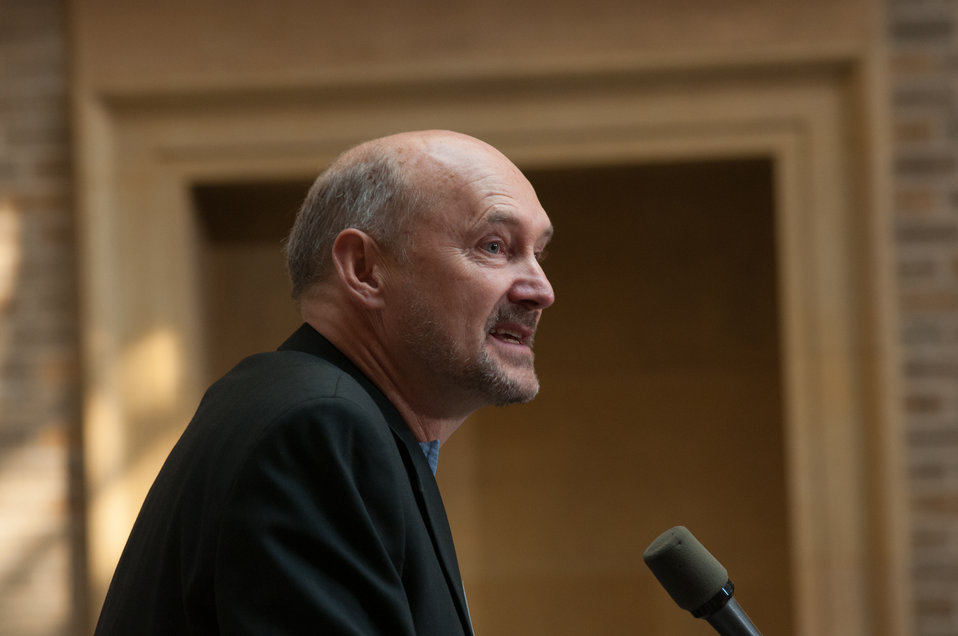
Alliance for Green Heat, President John Ackerly, speaks during the U.S. Department of Agriculture (USDA) Wood Energy Memorandum of Understanding, and awarded wood energy grants announcements event, at the USDA Headquarters, in Washington, D.C., on Wednesday, September 11, 2013. Signing the MOU are partnership leaders Biomass Thermal Energy Council, Executive Director Joseph Seymour; Alliance for Green Heat, President John Ackerly, USDA Agriculture Deputy Secretary Krysta Harden; Pellet Fuels Institute Executive, Director Jennifer Hedrick; Biomass Power Association, President and CEO Bob Cleaves, and Secretary Thomas Vilsack who signed it earlier. Moderating the event is Under Secretary for Rural Development Doug O’Brien.
The partnership agreement focuses on promoting wood energy nationwide as a means to address fire risks, bolster rural economic development, improve air quality, and help meet the Obama Administration’s renewable energy and energy efficiency goals. These organizations support the use of wood energy across the scale of users – from residential users, to commercial and intuitional facilities, to industrial production of heat and or electricity to drive businesses and feed the electrical grid.
Under the terms of the five grants announced by Deputy Secretary Harden, private, state and federal organizations will work together to stimulate the development of additional wood energy projects in their states. Collectively, $2.9 million will be spent o this effort -- $1.1 million on federal funds and $1.8 million in non federal funds. For more information o0n the cooperative agreement program, visit na.fs.fed.us.werc/wood-energy/ USDA Photo by Lance Cheung.